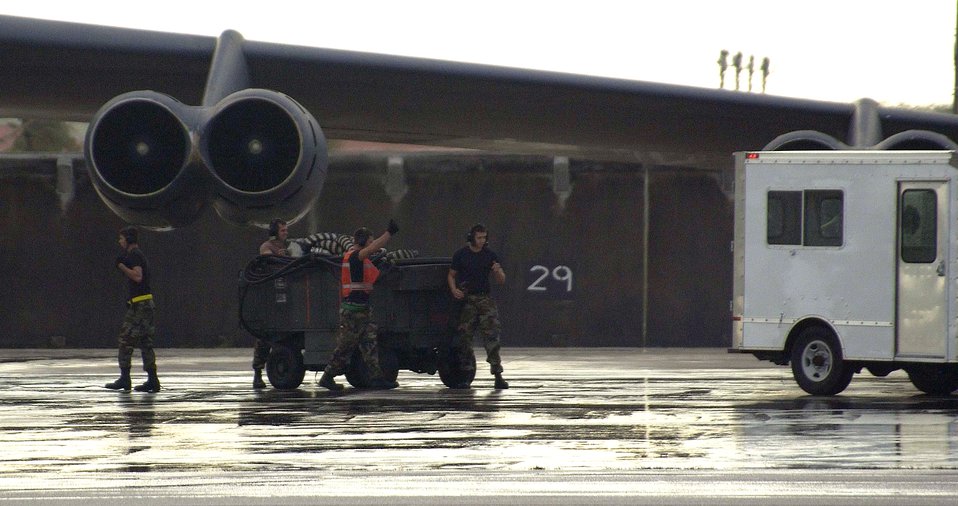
Ready to Go

Maintenance crews from the 36th Expeditionary Aircraft Maintenance Squadron work through a rain storm preparing a B-52 Stratofortress for takeoff as part of a counter-sea exercise Jan 15. The B-52s of the 23rd Expeditionary Bomb Squadron completed a five-day exercise this week without a significant mechanical write up on the bomber aircraft.